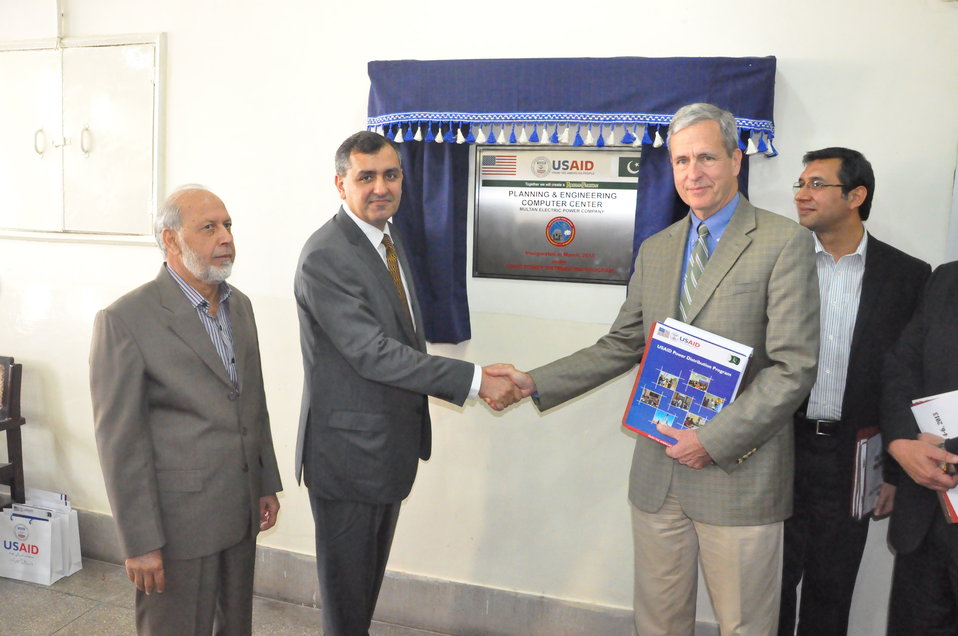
USAID equips MEPCO with state-of-the-art Planning and Engineering Computer Center

USAID Pakistan Mission Director, Jonathan Conly curtain unveiling with MEPCO BOD Charmain Mr. Naseem.